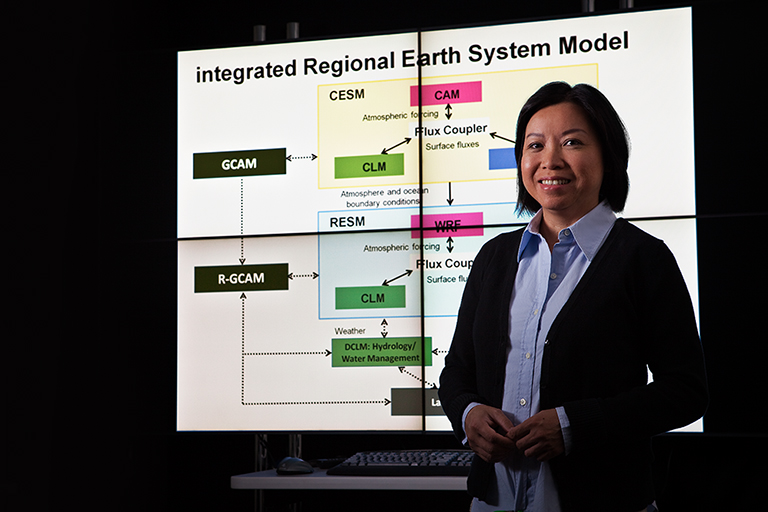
Ruby Leung

Building accurate, intricate computer models that allow scientists and stakeholders to understand the interplay between Earth, water, clouds, and atmosphere is what Dr. Ruby Leung does at Pacific Northwest National Laboratory. She conducts cutting-edge research and refines models that are vital to predicting climate and understanding the impact of energy policies, new technologies, and our changing climate. As an example, to better simulate climate change effects on hydrologic conditions over mountain watersheds, she developed a unique framework for modeling the regional coupled atmosphere and terrestrial systems. She also applies regional climate models to study hydroclimate processes and climate extremes, and the aerosol effects on regional climate and hydrological cycle. She received her M.S. and Ph.D. in atmospheric science from Texas A&M University. She earned a bachelor's degree in physics and statistics from Chinese University of Hong Kong, where she was the only woman in her graduating class of the physics department. Ruby is an outstanding mentor. She works closely with early career scientists and provides them with opportunities to develop new ideas and excel. She also participates as a mentor to many people through the lab's scientist and engineer development program.

Read her full story at energy.gov/diversity/articles/women-energy-ruby-leung